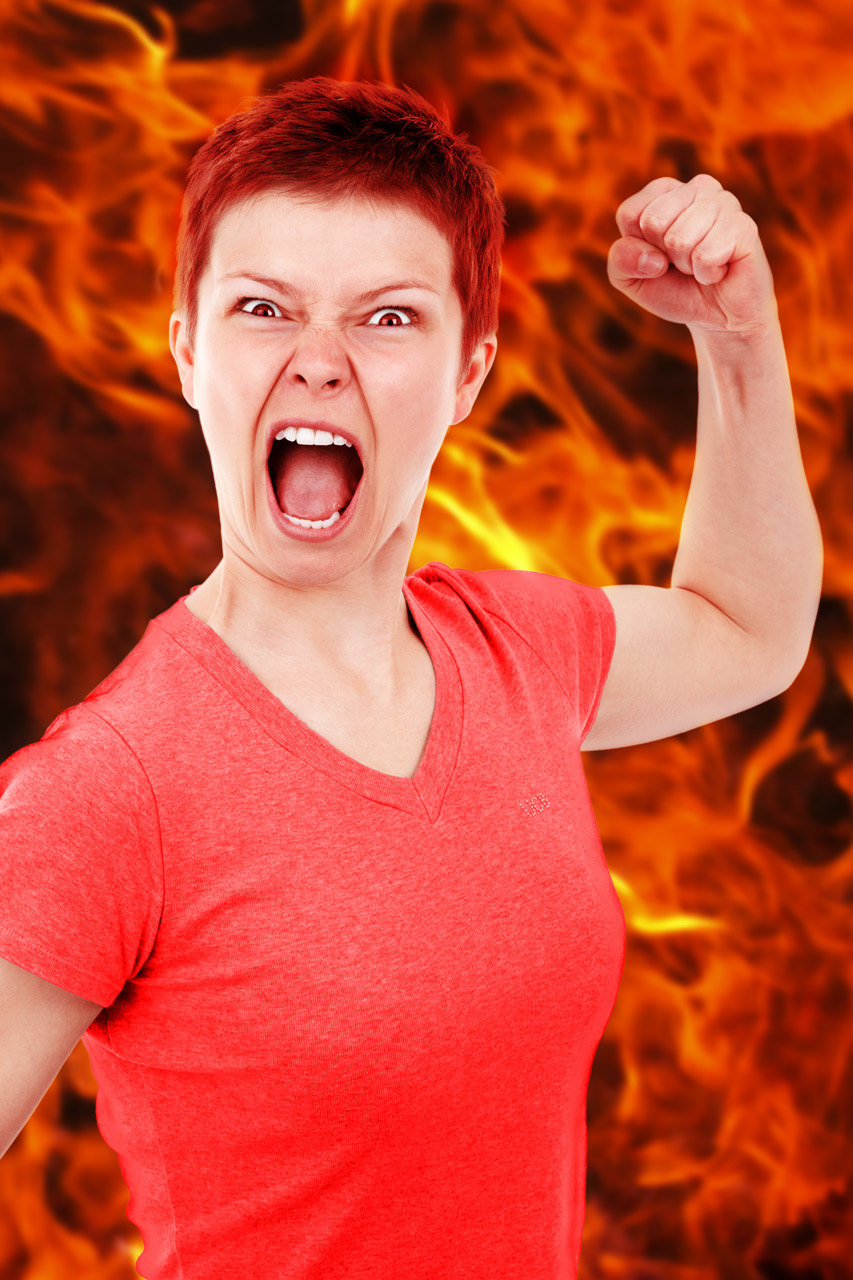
Woman on fire

Angry young woman ready to punch with fire in the background - jana svojsova.